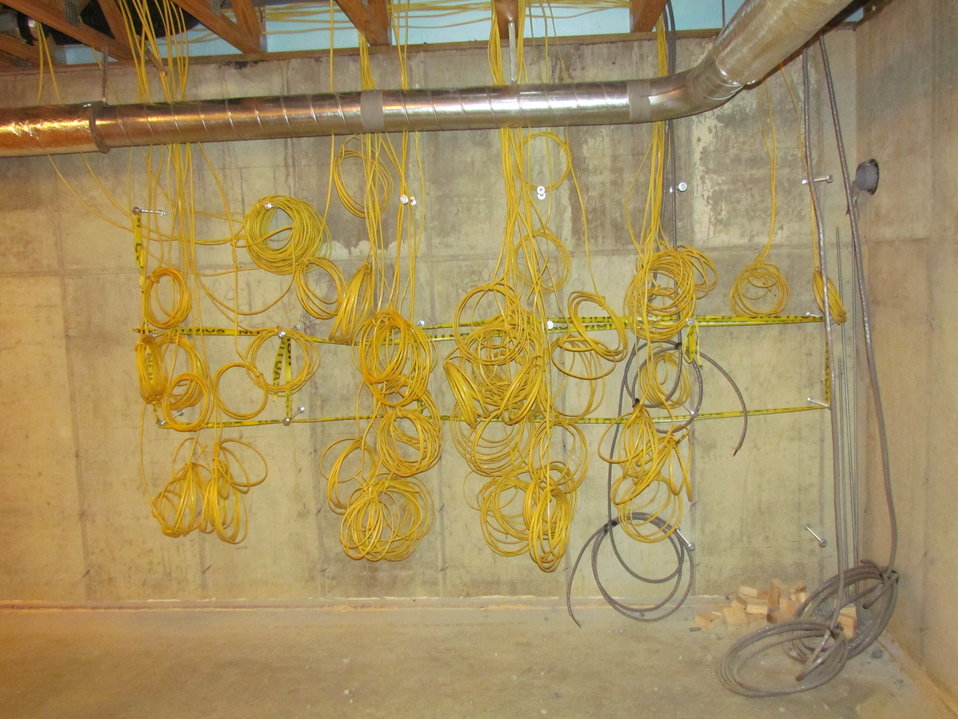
Net-Zero Energy Residential Test Facility – Photo taken of southwest corner of NZERTF. Wiring being put into place that will connect to electrical breaker panels.